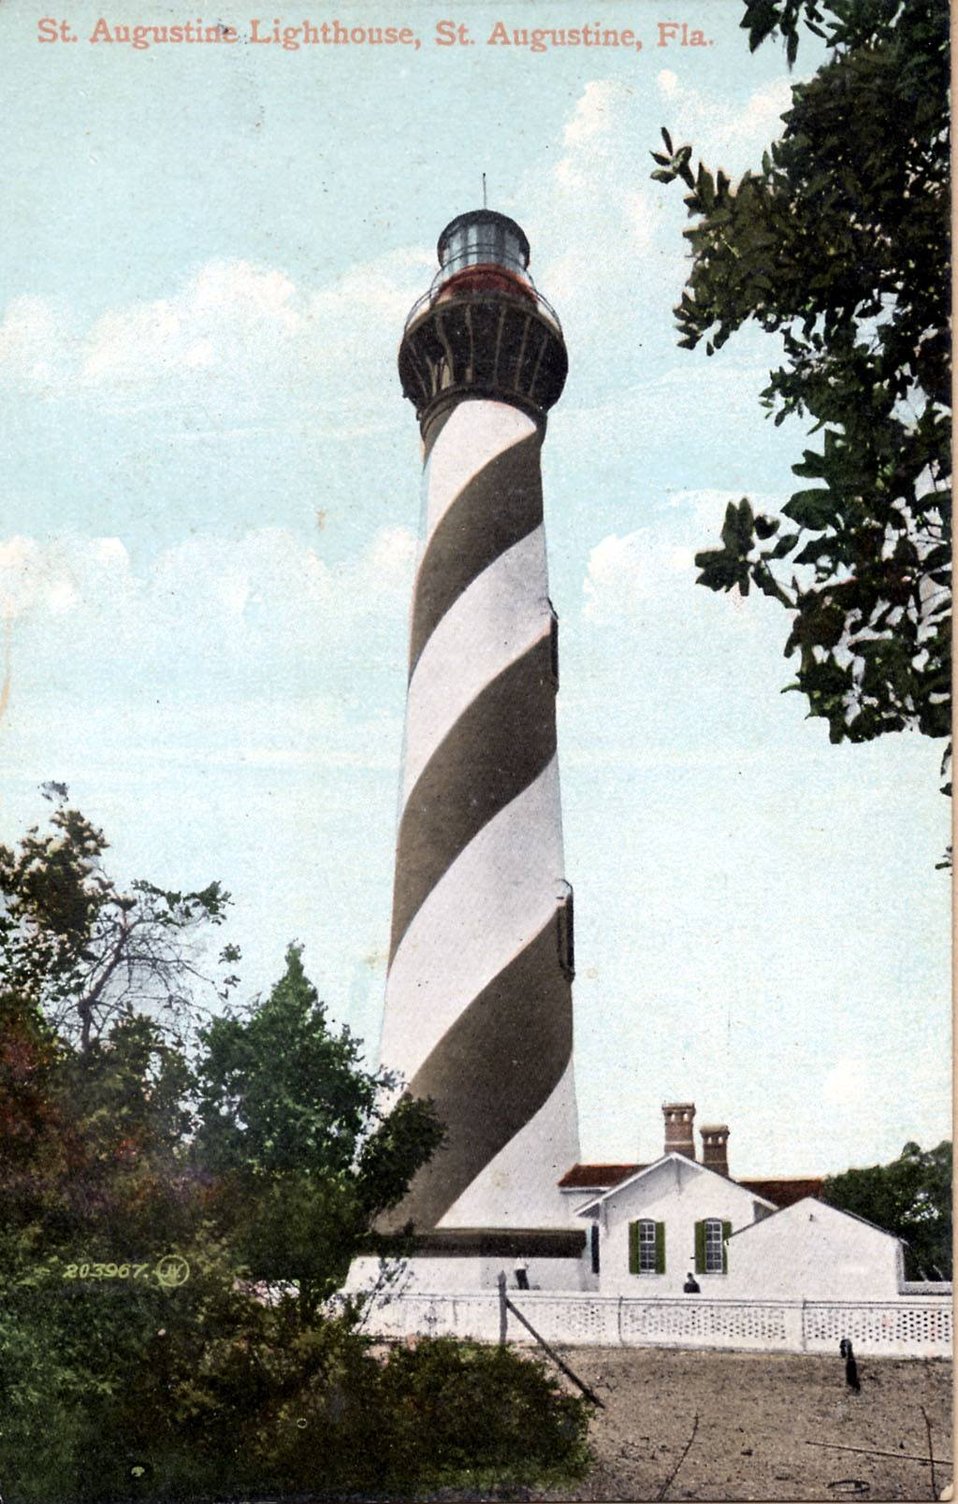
St. Augustine Lighthouse